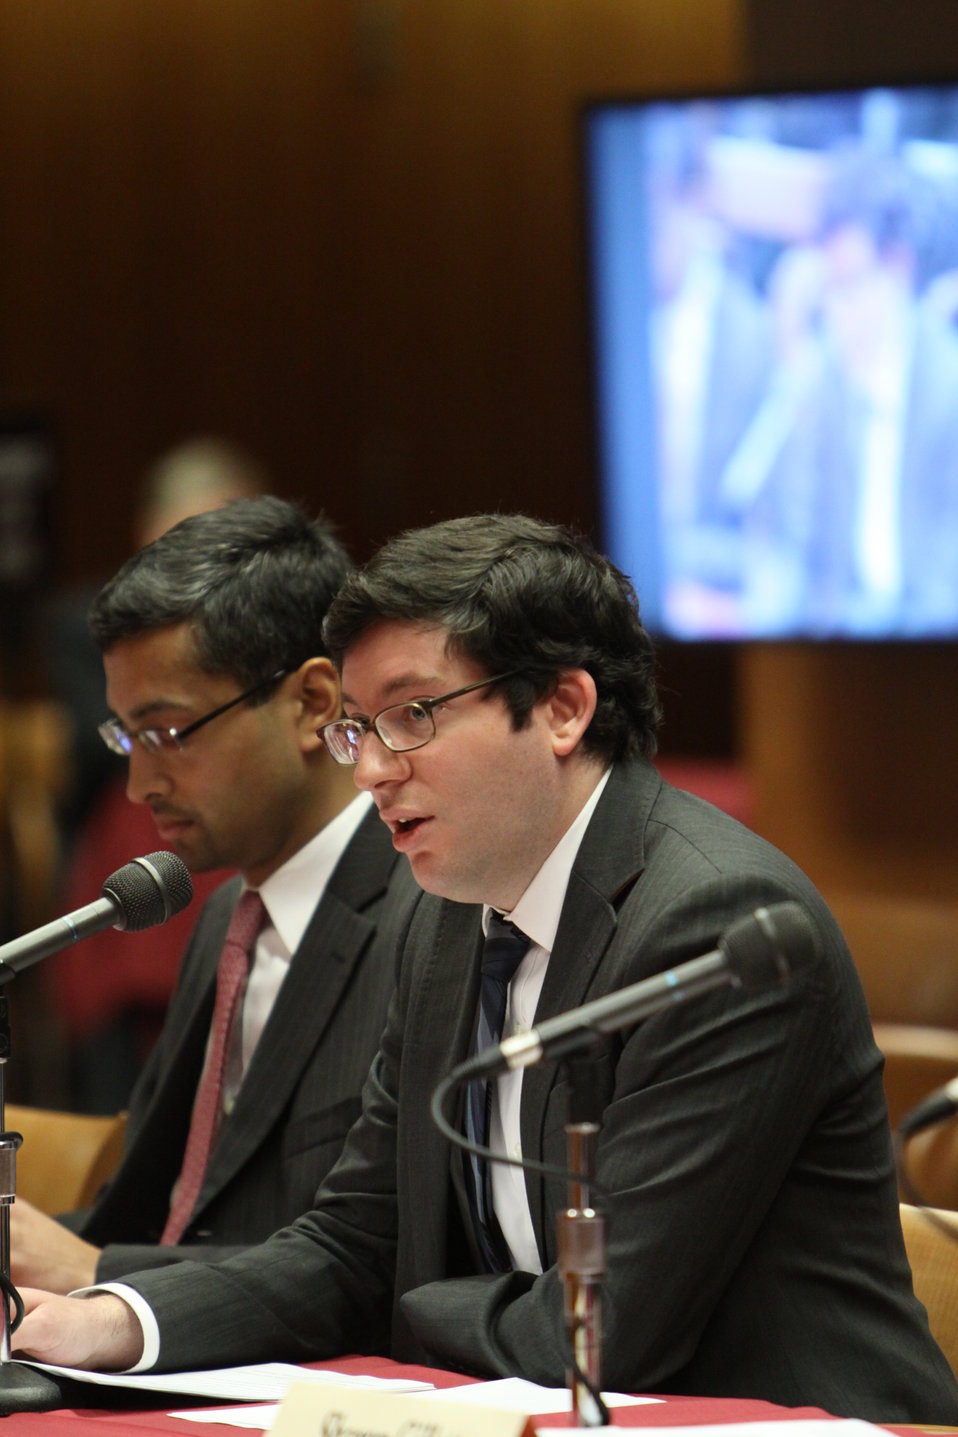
David Tannenbaum, FCC Special Counsel and Paul de Sa, Chief, Office of Strategic Plans and Policy Analysis